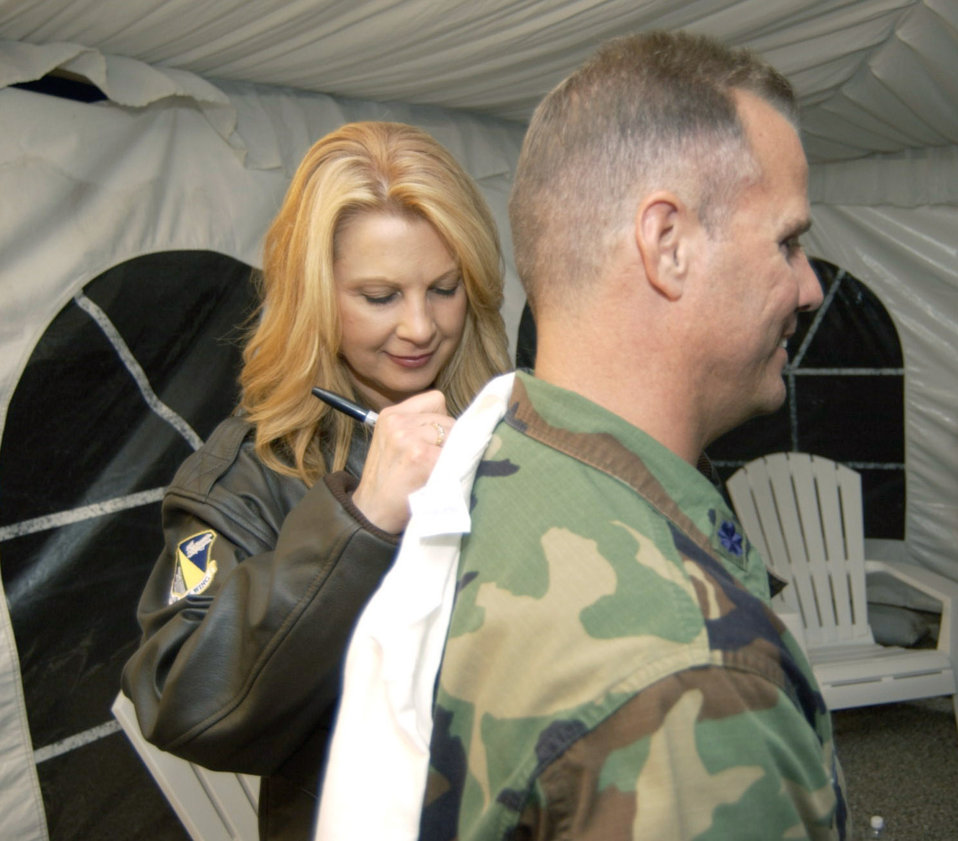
Give me a sign

WRIGHT-PATTERSON AIR FORCE BASE, Ohio -- Country singer Patty Loveless signs a T-shirt for Lt. Col. David McElveen here July 16. More than 5,000 Airmen, civilian employees, retirees and families gathered for a free concert. Ms. Loveless' performance was sponsored by the Spirit of America Tour. Colonel McElveen is assigned to the base's Air Force Research Laboratory.